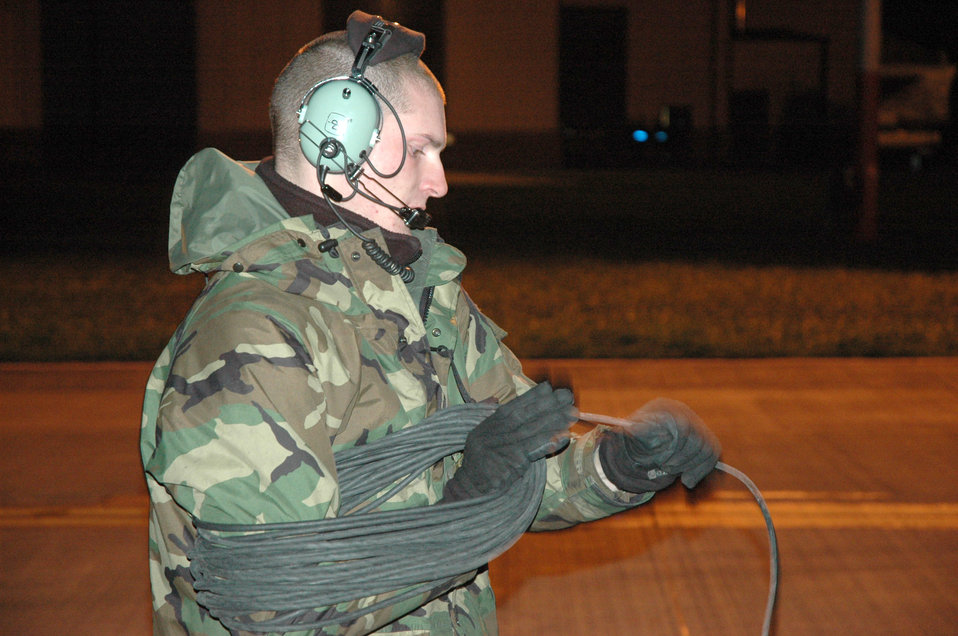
Fairchild, Grand Forks crews support NATO Summit

Staff Sgt. Justin Elder rolls up a communications line following an engine run-up and defueling at Royal Air Force Mildenhall, England, Dec. 4. KC-135 Stratotanker aircrews, crew chiefs and maintainers from Fairchild Air Force Base, Wash., and Grand Forks AFB, N.D., are deployed RAF Mildenhall to augment its refueling wing. Sergeant Elder is a crew chief assigned to the 92nd Air Refueling Wing.